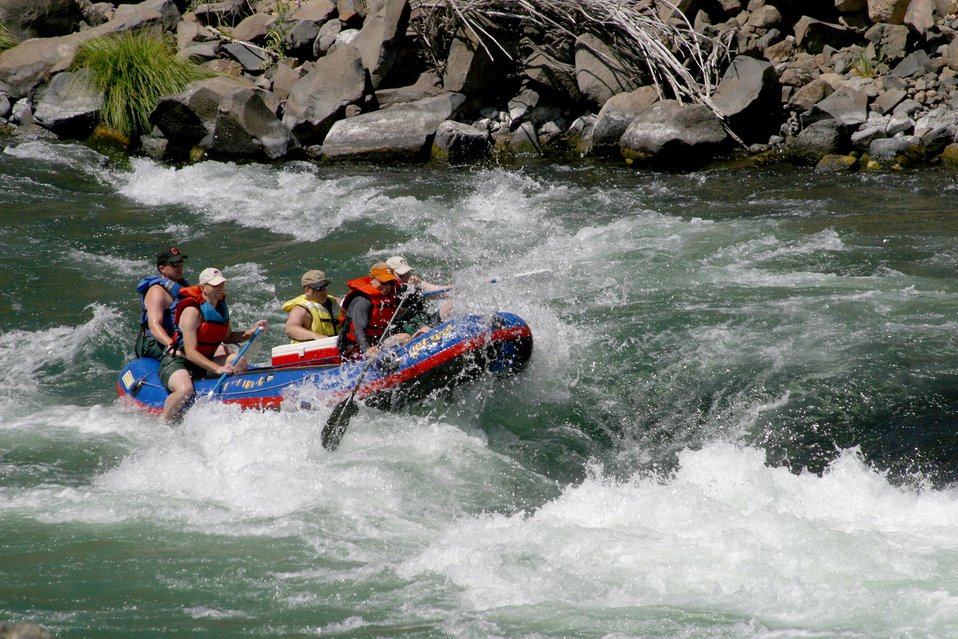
Boxcar Rapids class III, has large waves with a small drop that form turbulent currents. 7/26/03 Pelton Dam 3600 cfs: Moody Rapids 4300 cfs.